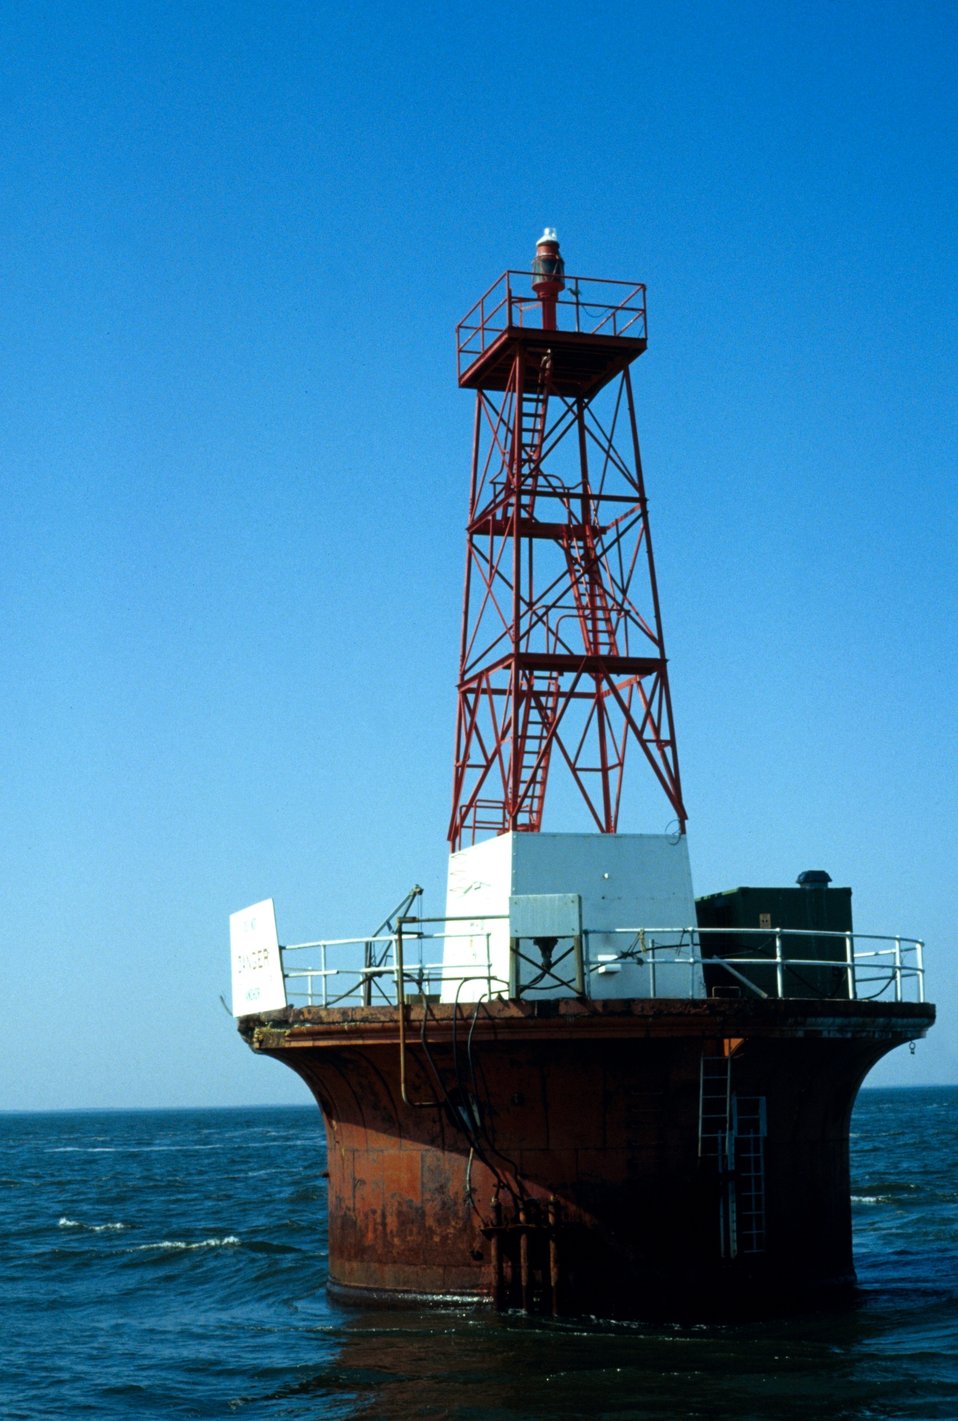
Elbow of Cross Ledge automated light in Delaware Bay.